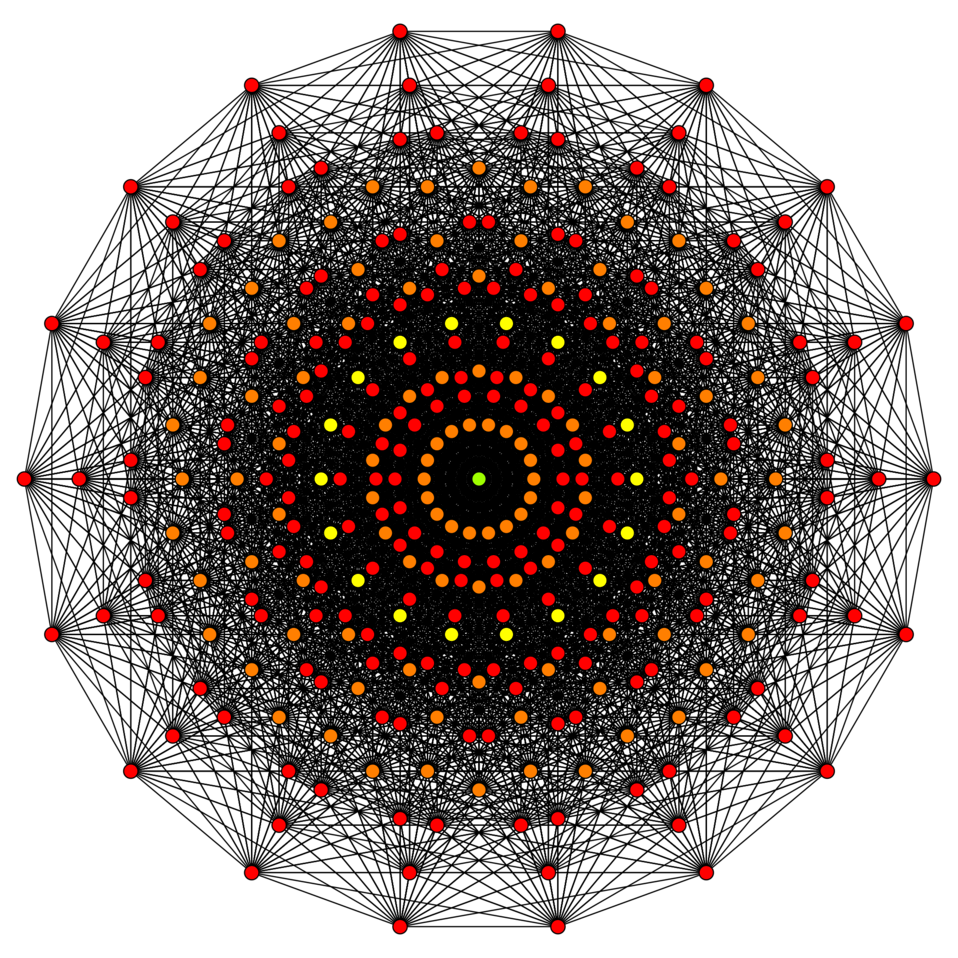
10-demicube graph, red, orange, yellow green vertices have multiplicity of 1,2,4,8.